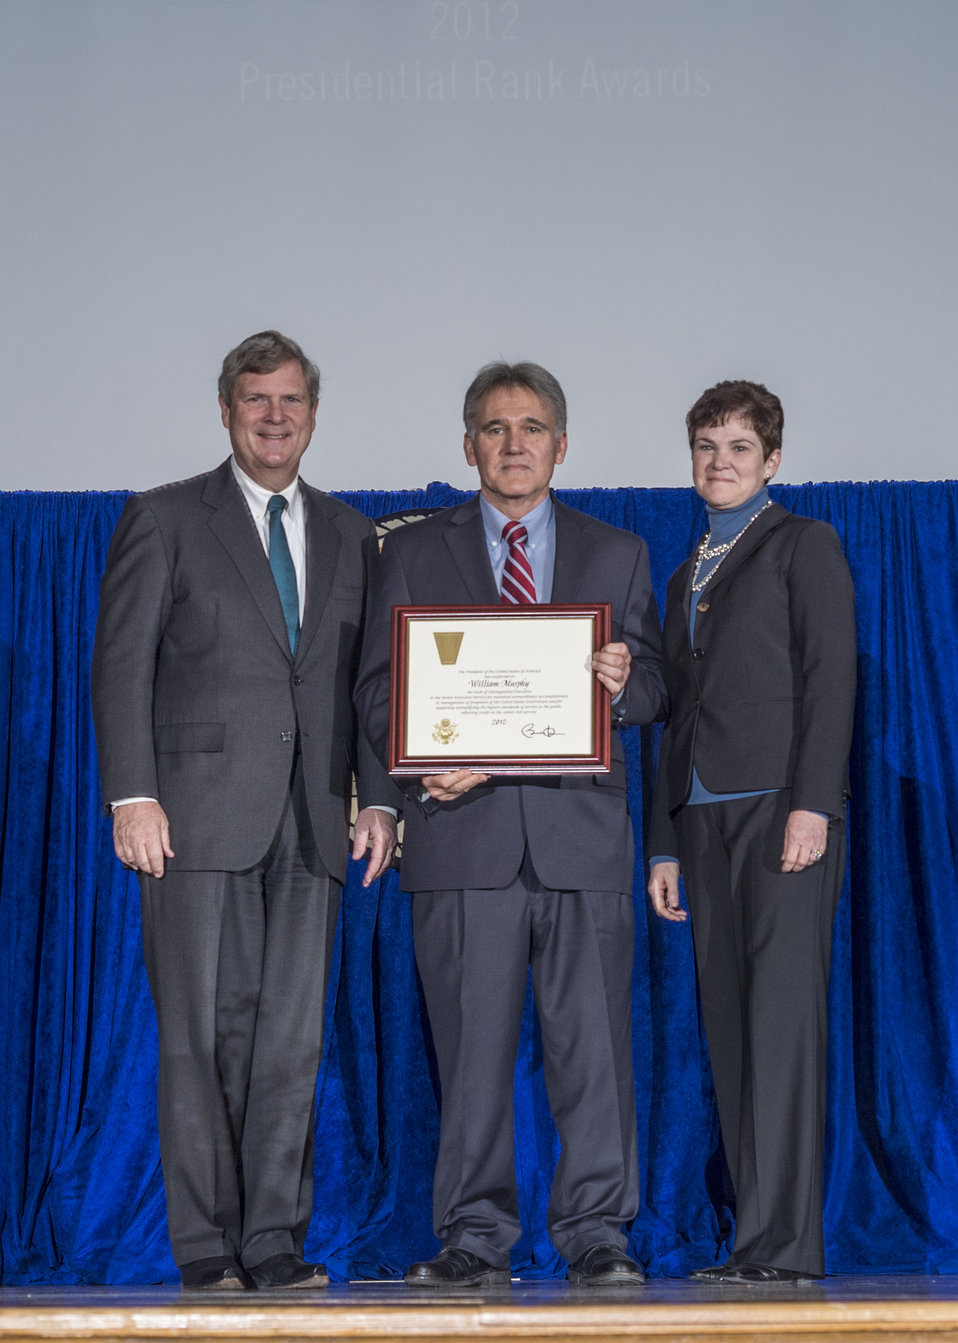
Agriculture Secretary Tom Vilsack and Agriculture Deputy Secretary Krysta Harden present the Presidential Rank Award to William Murphy for Distinguished Executive in the Senior Executive Service for sustained extraordinary accomplishment in management of programs of the U.S. Government and for leadership exemplifying the highest standards of service to the public, reflecting credit on the career civil service at the 2013 Secretary's Honor Awards in the Jefferson Auditorium at the U.S. Department of Agriculture (USDA) in Washington, D.C. on Wednesday, Dec. 11, 2013.